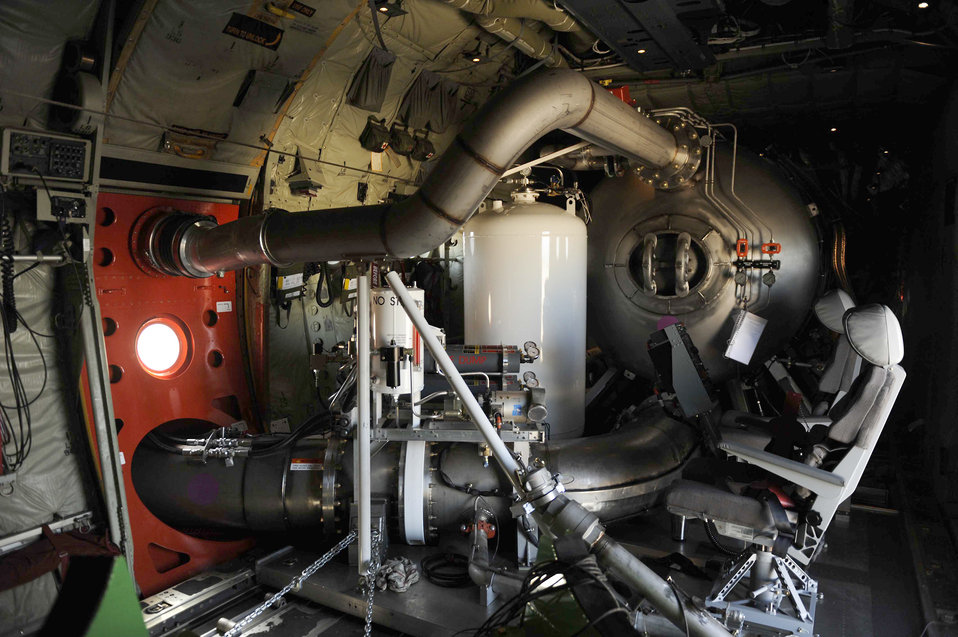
Texas Wildfires

The Modular Airborne Firefighting System, like the one pictured here, is housed aboard a C-130 Hercules, and is capable of dispensing 3,000 gallons of water or fire retardant in less than 5 seconds. Airmen will use MAFFS-equipped C-130s to fight wildfires which have spread across parts of Texas and have burned more than 1,000 square miles of land.